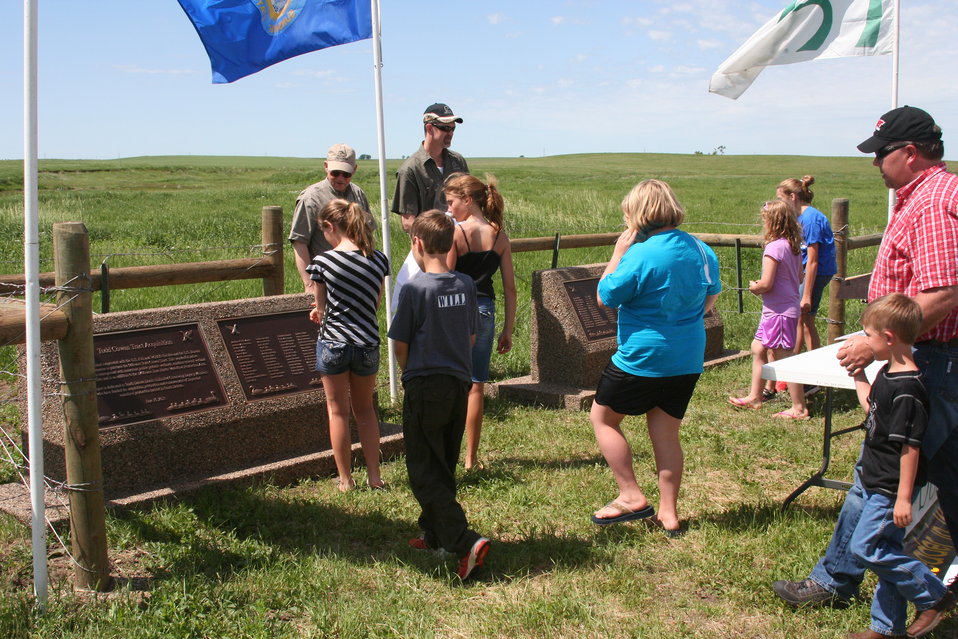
2013 Green Wing Dedication 053

Green Wing Dedication unveiling.